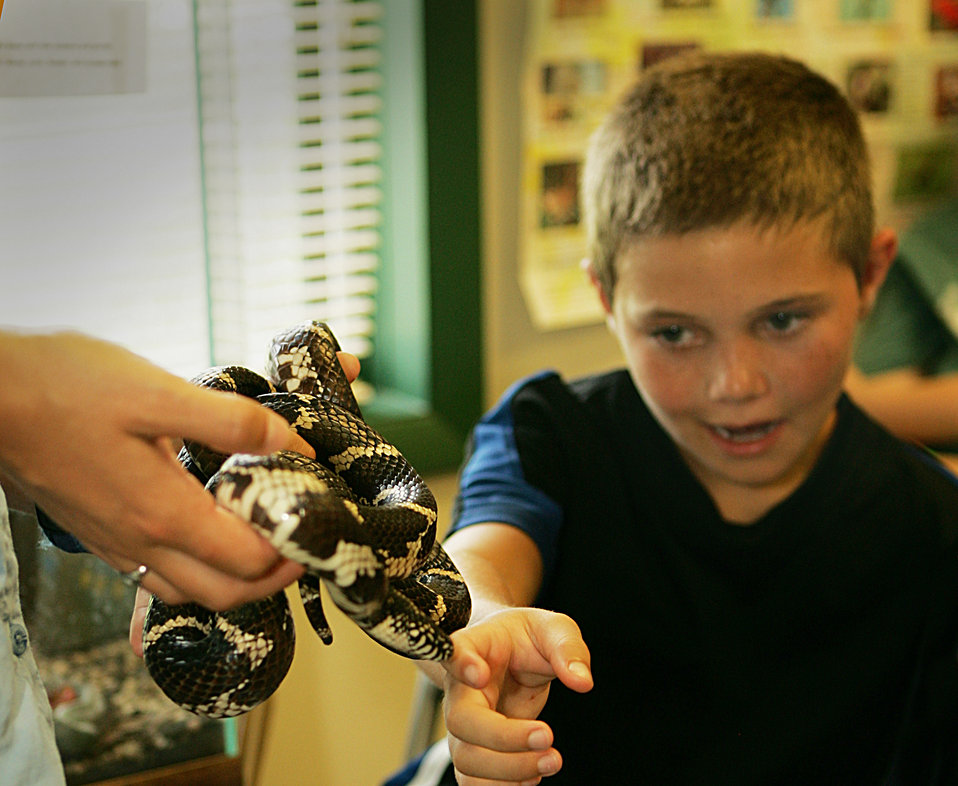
A brave boy touches a snake!

Learn about nature at your local National Wildlife Refuge by participating in their educational activities.